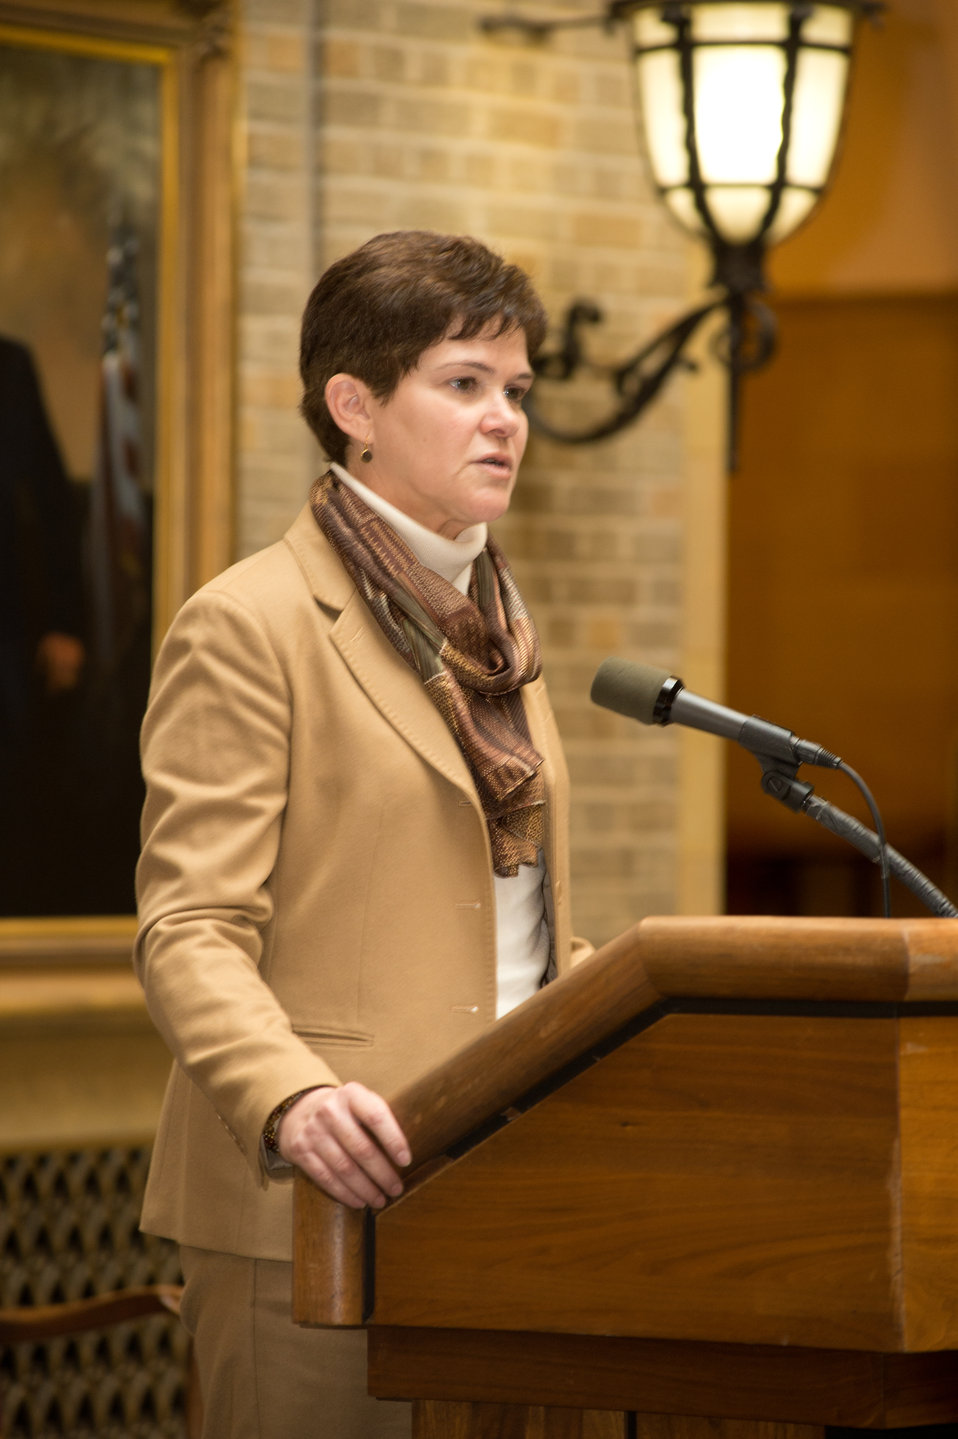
Krysta Harden, Agriculture Deputy Secretary addresses employees and partner agencies at the United States Department of Agriculture (USDA), Feds Feed Families closing ceremony, on Wed., Nov. 13, 2013 in Washington, D.C. Federal employees nationwide stepped up the challenge of Feds Feed Families and gathered 9 million pounds of food for food banks across the nation and the National Capital Region for families in need setting an all time record high.